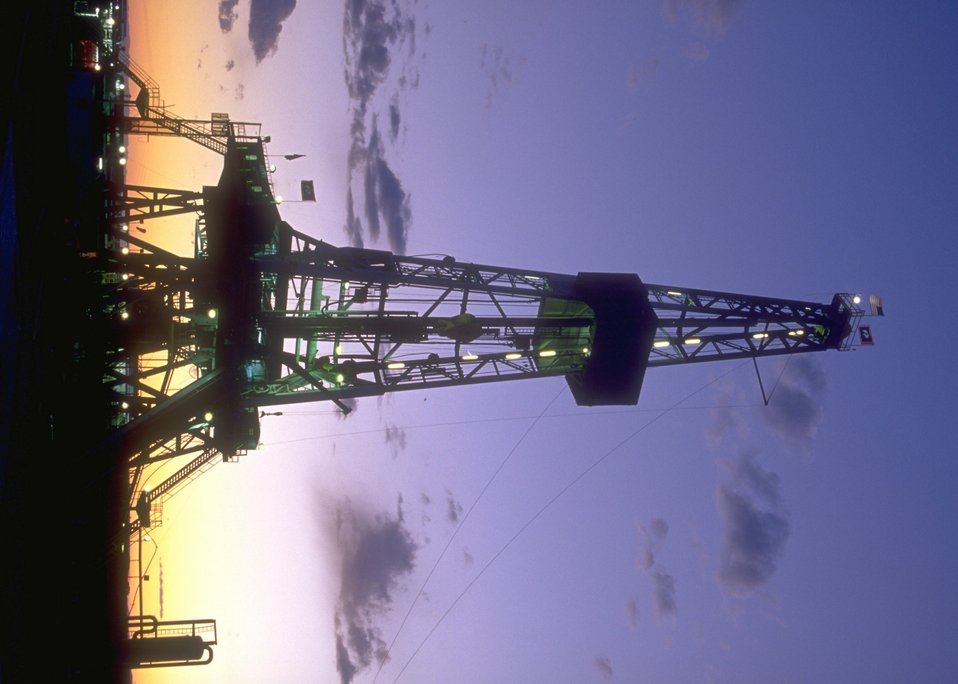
Burlington Northern deep well rig, Casper Field Office.